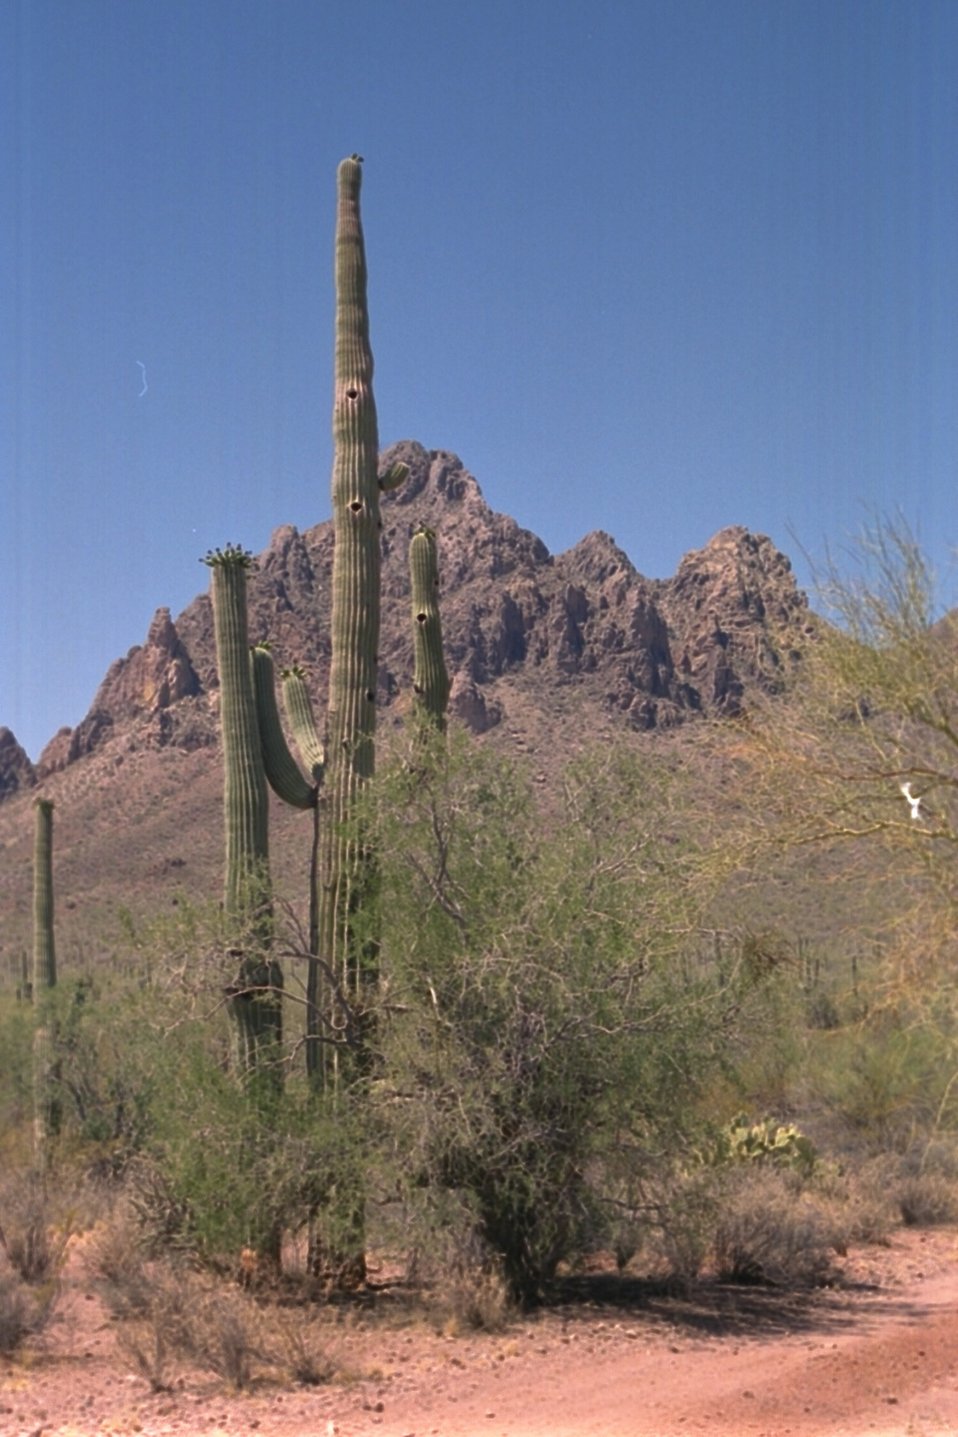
Ironwood Forest National Monument with two Saguaro Cacti standing side by side. The backgound is the Ragged Top Mountain, described as the biological and geological crown jewel of the Silver Bell Mountains.